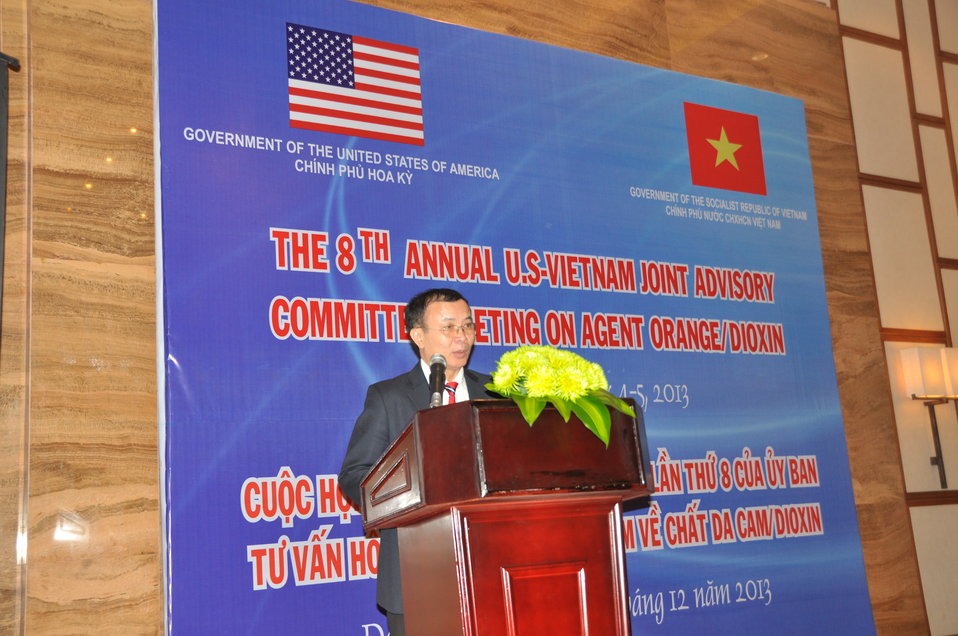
Dr. Le Ke Son, Office 33 opens 8th Annual JAC Meeting

Danang, December 4, 2013.